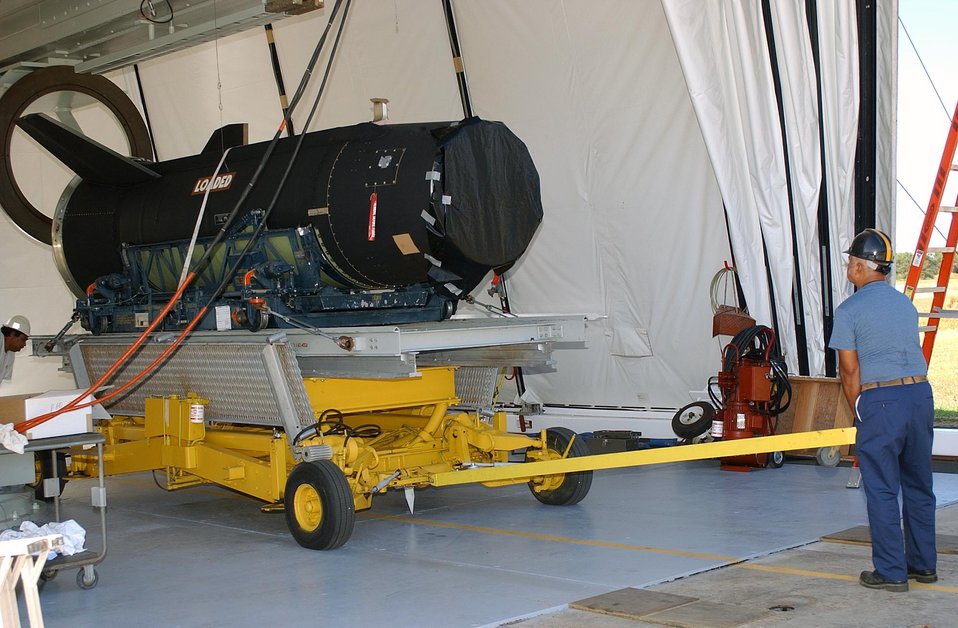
KTF STAFF MEMBER LOADING THE FM-5 TARGET ROCKET ON ITS RAIL LAUNCHER.

FM-5 IS A MISSILE DEFENSE ROCKET BEING PREPARED FOR LAUNCH. SANDIA'S KAUAI TEST FACILITY, OPERATED FOR DOE, IS ON THE U.S. NAVY'S PACIFIC MISSILE RANGE FACILITY ON THE ISLAND OF KAUAI, HAWAII. SANDIA SCIENTISTS AND TECHNICIANS AT KTF CONDUCT ROCKET FLIGHT TEST EXPERIMENTS RANGING FROM OFFENSIVE AND DEFENSIVE WEAPONS TESTING TO ATMOSPHERIC STUDIES AND HIGH TECH STAR GAZING.